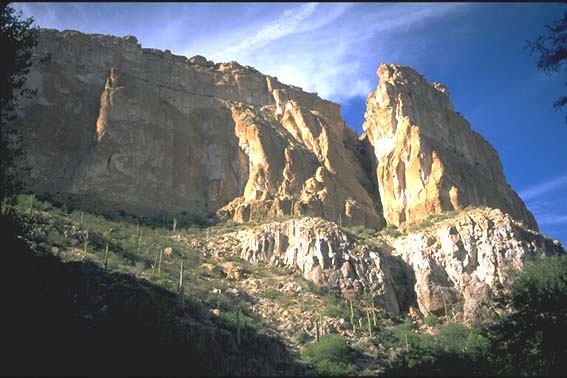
Aravaipa Canyon Wilderness